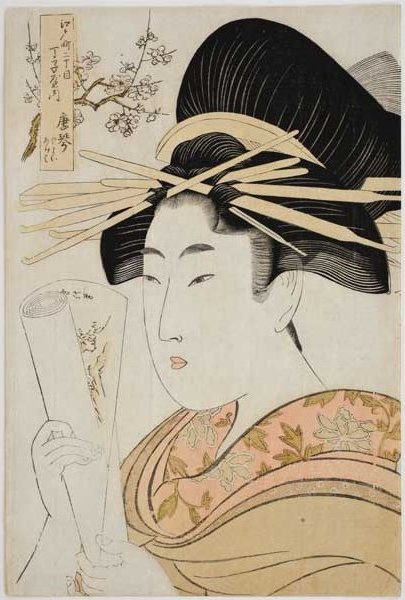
'Karagoto of the Brothel House Chojiya' by Utamaro, Honolulu Museum of Art